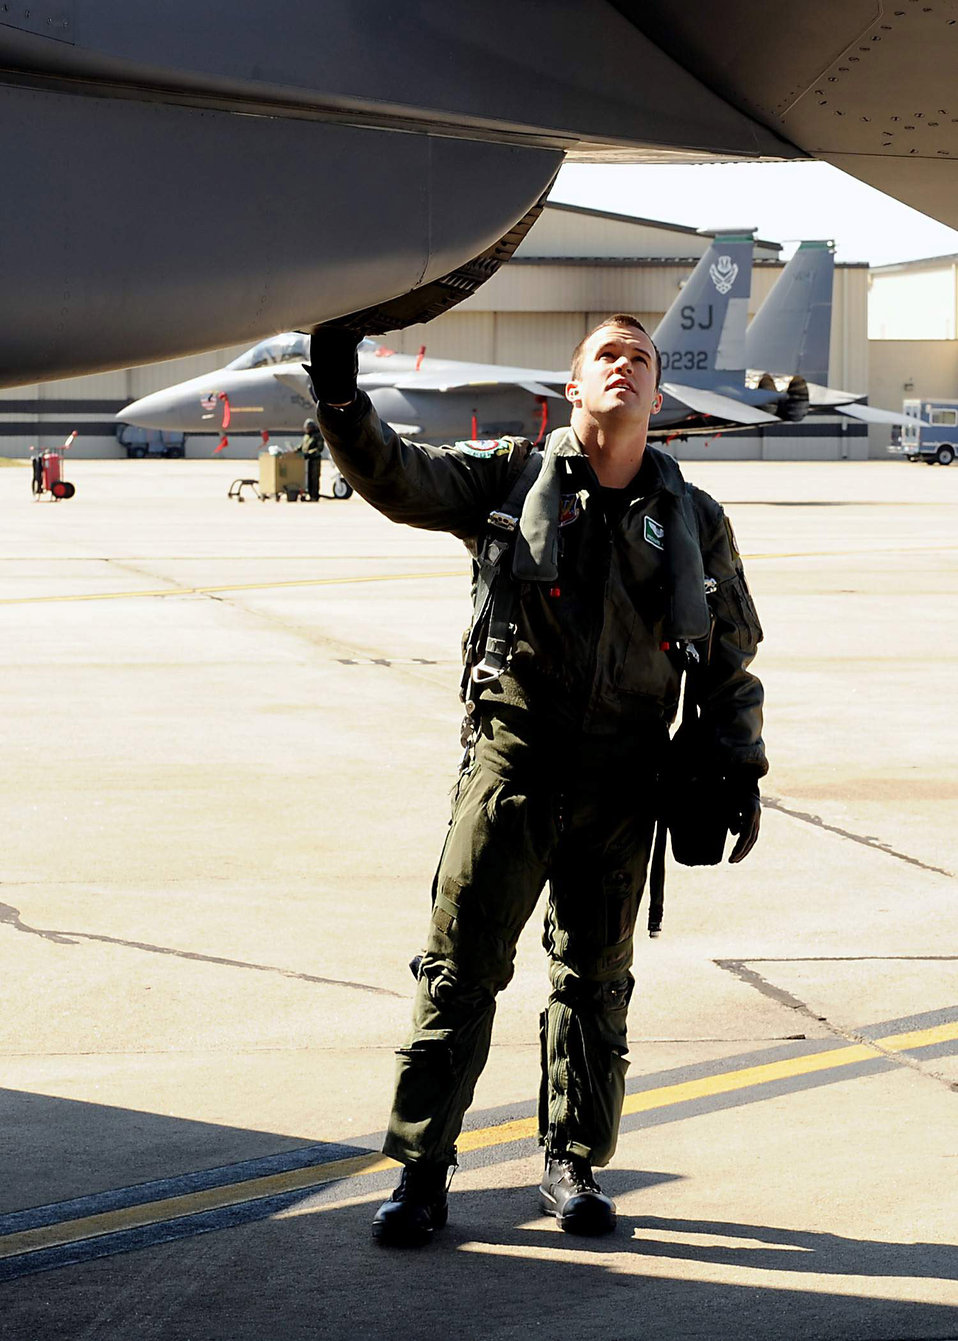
F-15E pilots protect ground forces in massive firefight

Captain Prichard Keely checks over his F-15E Strike Eagle before he takes off Feb. 23 from Seymour Johnson Air Force Base, N.C. In April 2008, Captain Keely is a 335th Fighter Squadron weapons systems officer, and his aircrew from the 335th FS provided close-air support for ground forces during a massive firefight in Shok Valley, Afghanistan. The 335th FS was deployed in support of Operation Enduring Freedom.